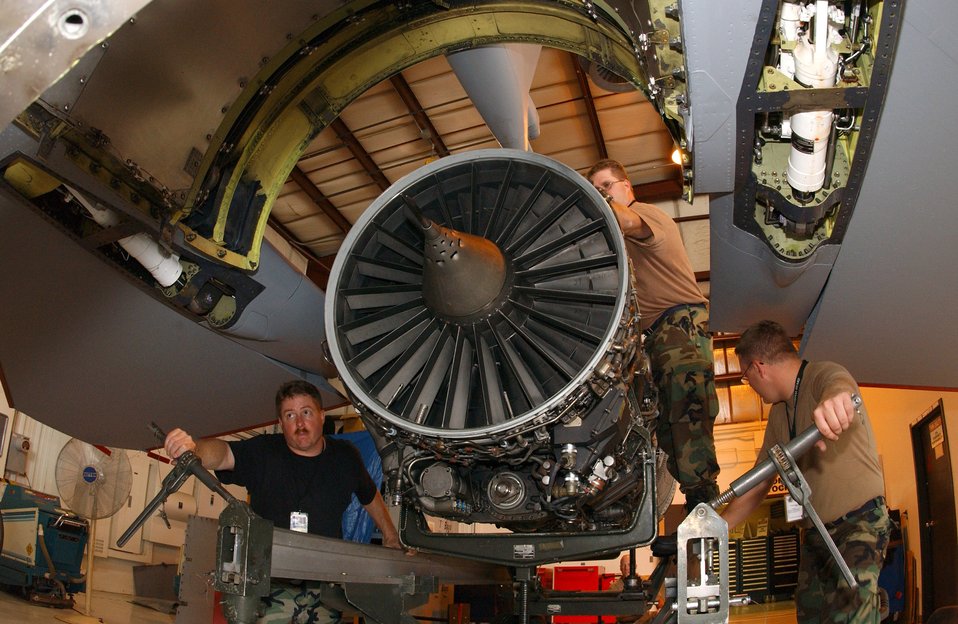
Maneuvering

FARGO, N.D. -- Airmen maneuver a jet engine into an F-16 Fighting Falcon airframe at the North Dakota Air National Guard base Aug. 9. The Airmen are assigned to the 119th Maintenance Squadron.